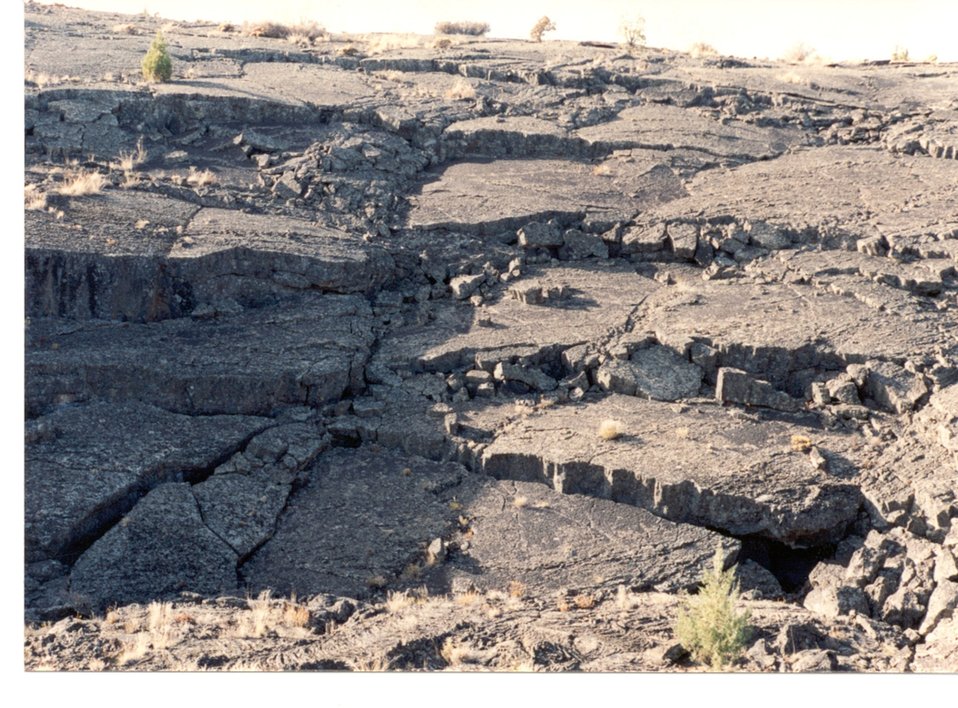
Ridge Collapse on Wapi Craters of the Moon Shoshone Field Office USRD Upper Snake River District